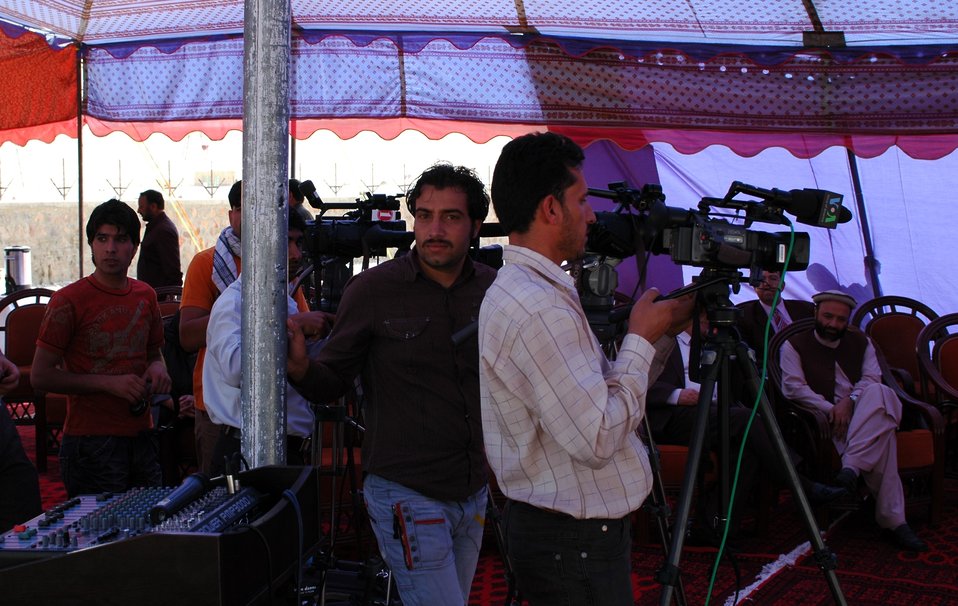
105 MW Tarakhil Power Plant Handover